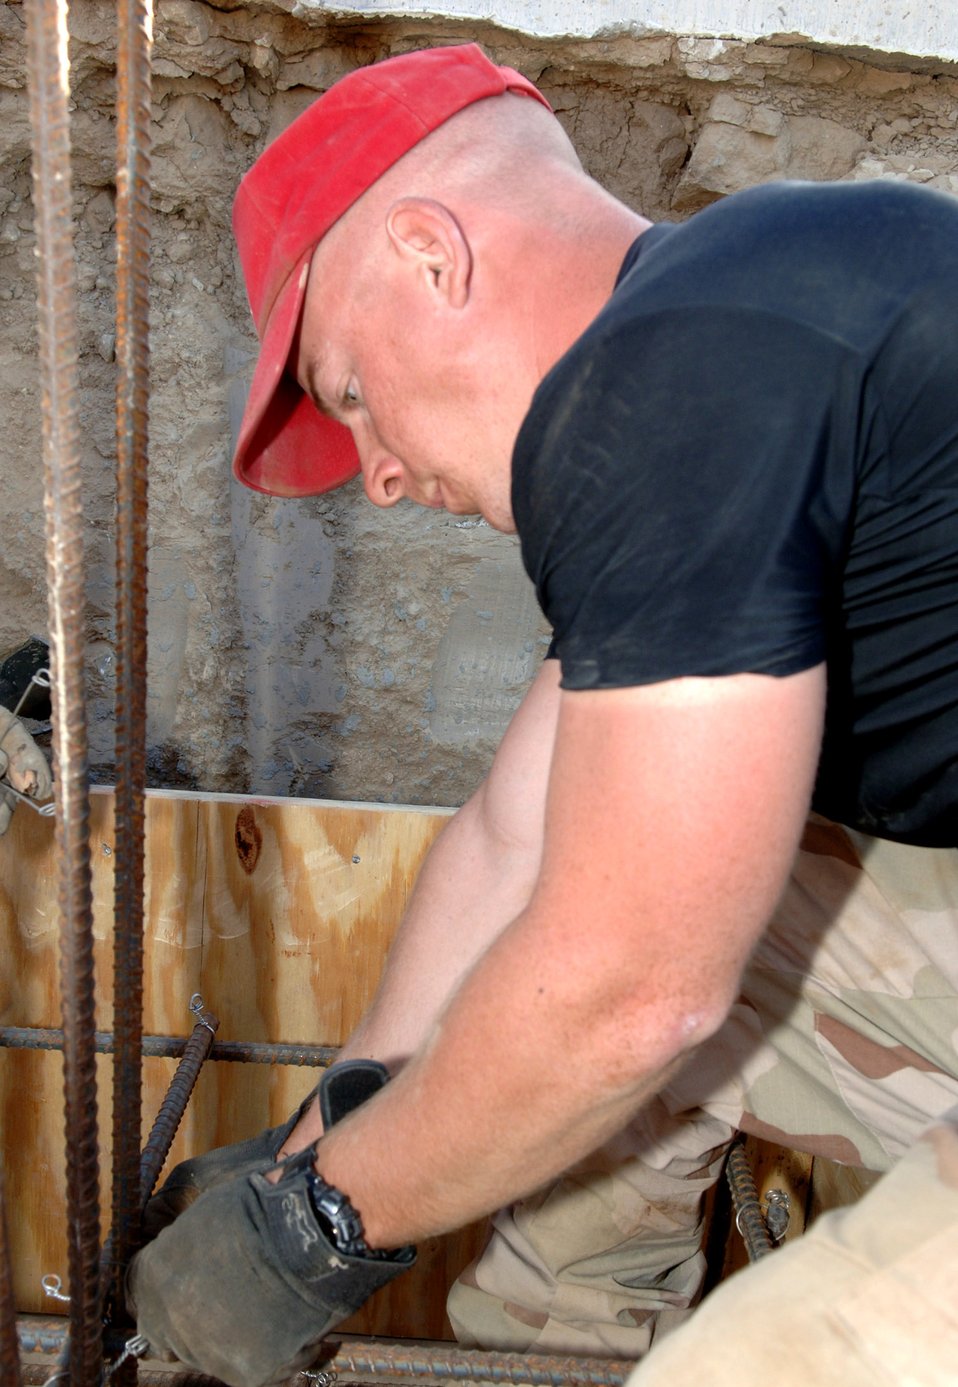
Making way

BAGRAM AIR FIELD, Afghanistan -- Staff Sgt. Patrick Vance, a power production troop, ties together rebar cages for a pre-engineered building support Oct. 17. The support will be part of the foundation for new passenger terminal here. The 1st Expeditionary Red Horse Group is here to build the 7,750-square-foot terminal, which they expect to open in early 2006. The sergeant deployed here from Nellis Air Force Base, Nev.